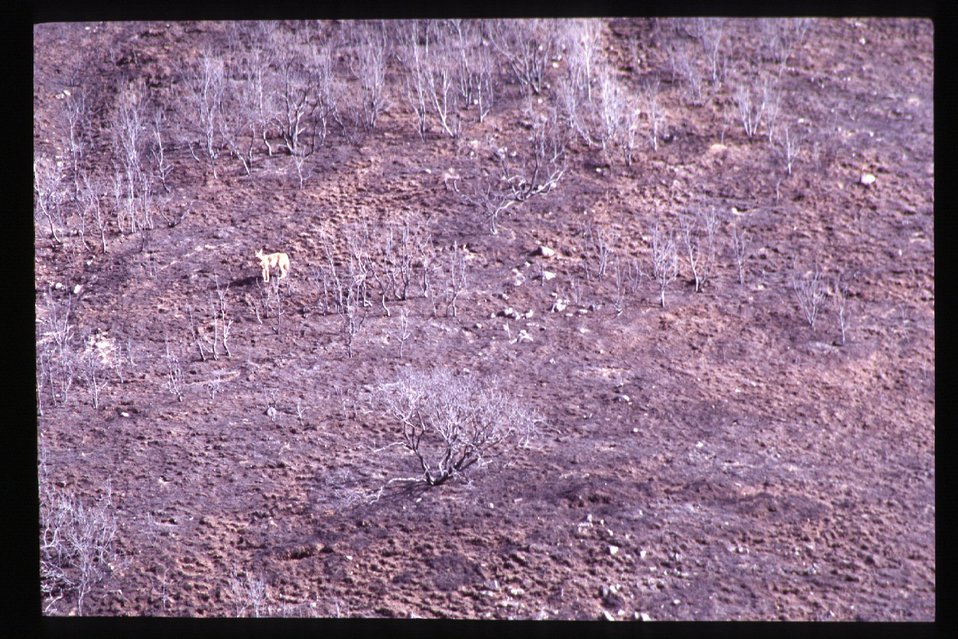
8th Stree Fire Coyote in a burned area Boise Front Hulls Gulch Four Rivers Field Office LSRD Lower Snake River District